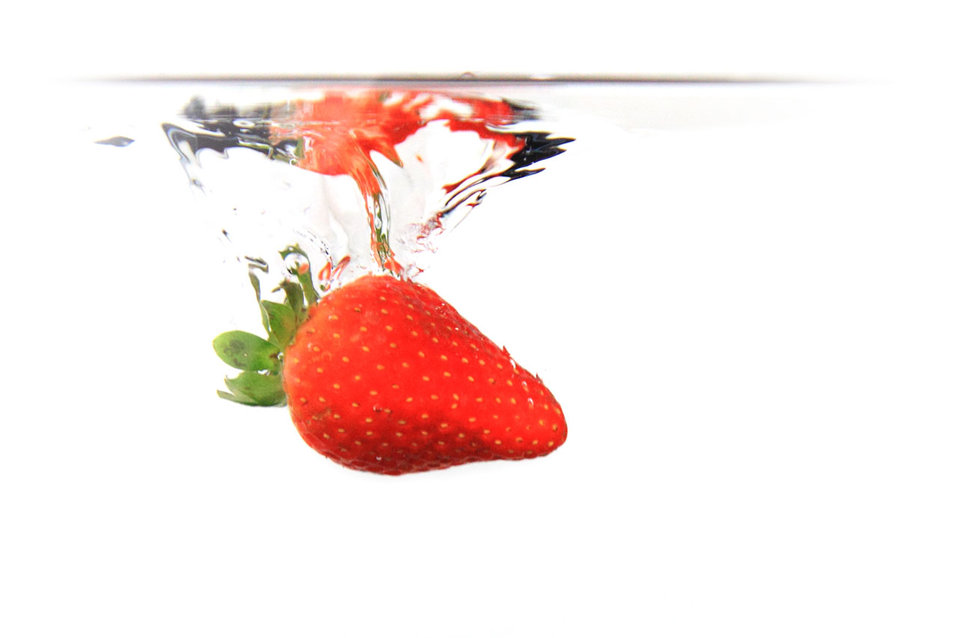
Strawberry splash

Strawberry splashing into water.